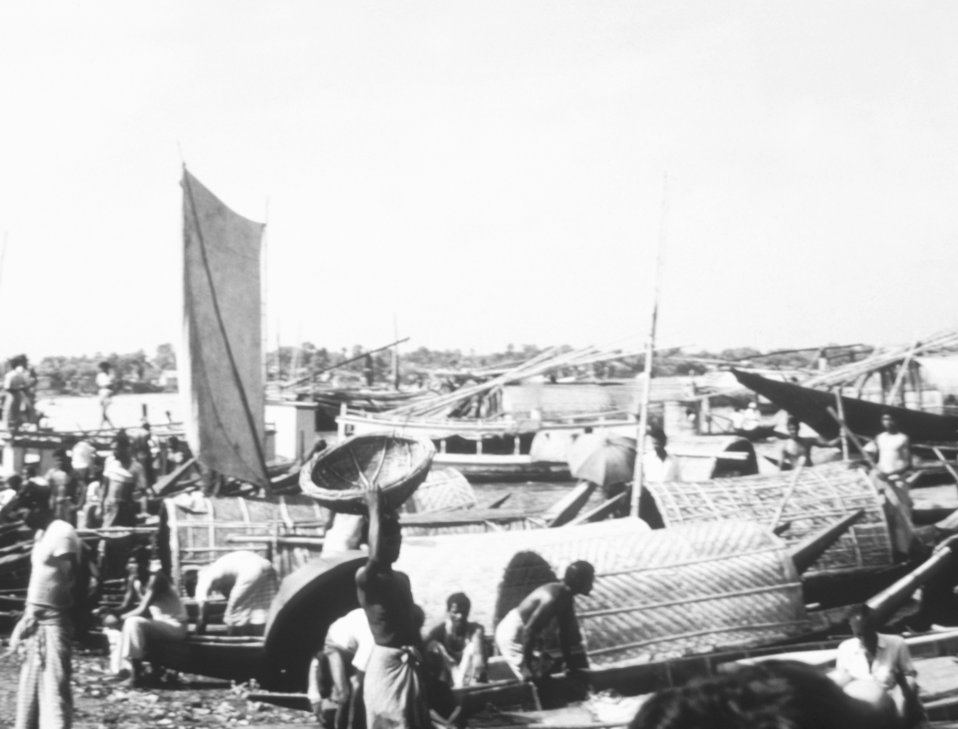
This photograph was taken during a 1974 cholera research and nutrition survey amidst floodwaters around Bangladesh.